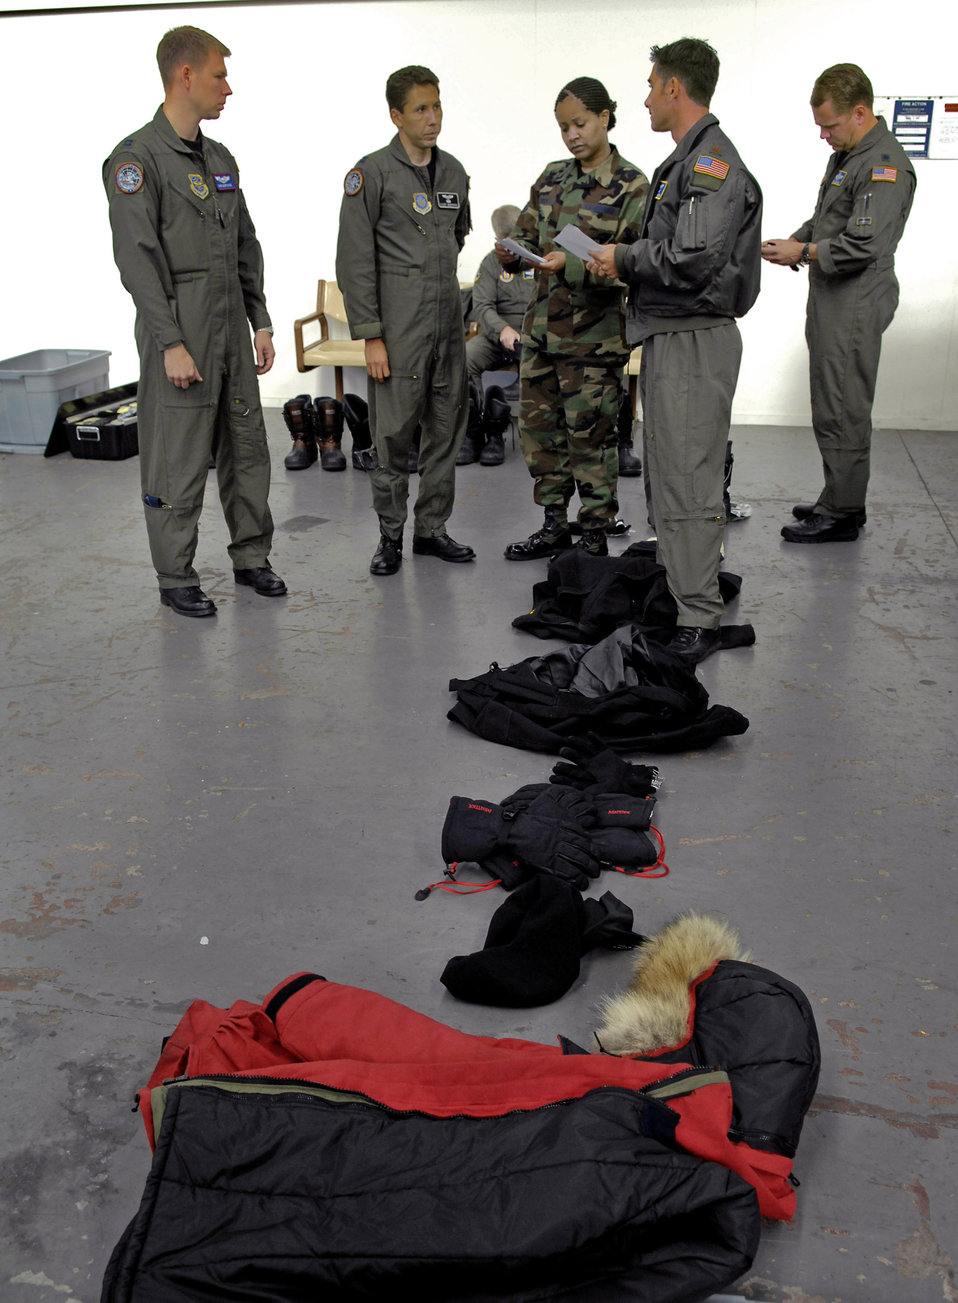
Getting ready to fly to McMurdo

Staff Sgt. Patrina Groscup goes over a cold weather gear checklist with C-17 Globemaster III pilots for the upcoming winter fly-in missions to Antarctica at Christchurch, New Zealand, Aug. 19. A C-17 and 31 Airmen from McChord Air Force Base, Wash., will begin the annual winter fly-in augmentation of scientists, support personnel, food and equipment for the U.S. Antarctic Program at McMurdo Station Aug. 20. WinFly is the opening of the first flights to McMurdo station, which closed for the austral winter in February.